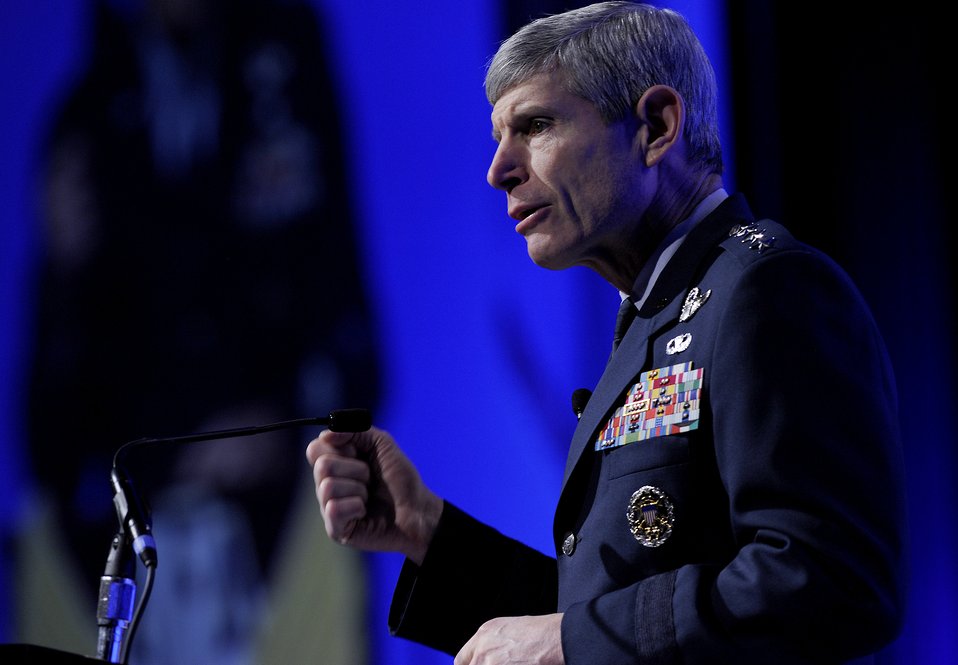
CSAF's AFA Kick-Off Speech

Air Force Chief of Staff Gen. Norton Schwartz addresses attendees Feb. 23, 2012, during the Air Force Association's 2012 Air Warfare Symposium and Technology Exposition in Orlando, Fla. He told the audience the Air Force will maintain its readiness despite the austere fiscal environment.